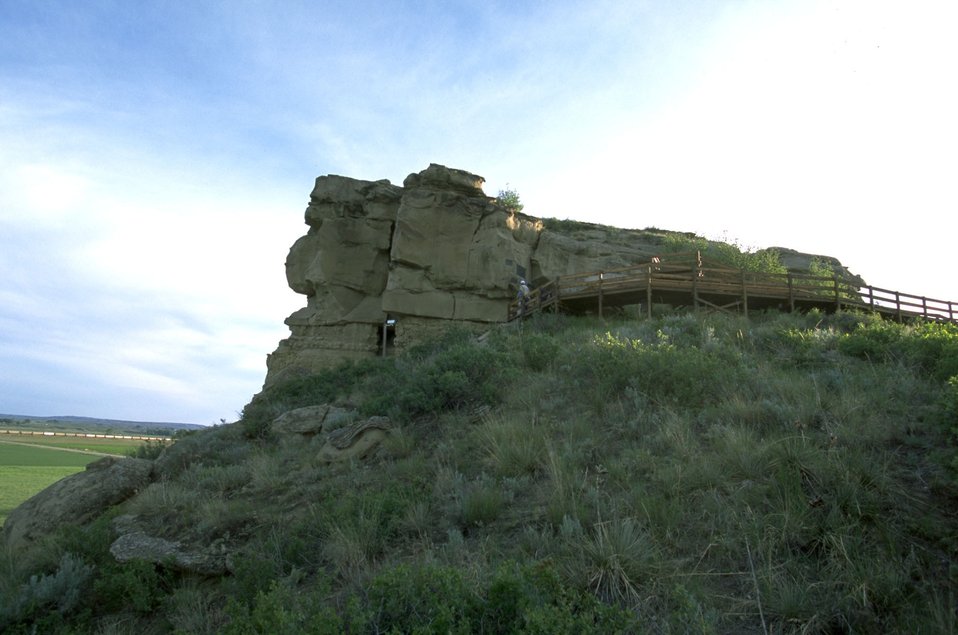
East promontory of Pompeys Pillar showing Broardwalk and Signature Area